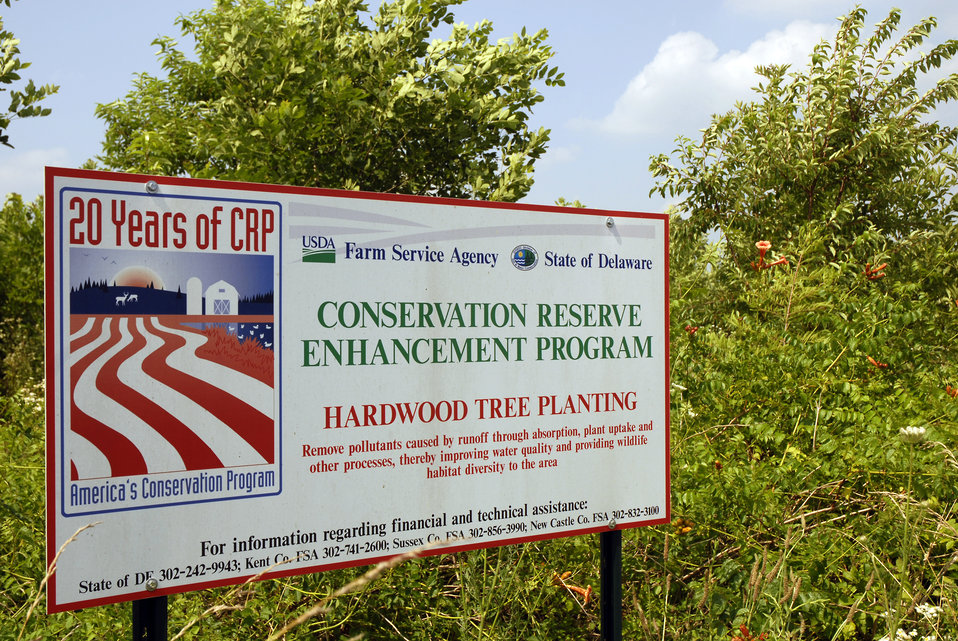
A sign is posted on land announcing 20 years of the U.S. Department of Agriculture’s (USDA) Natural Resources Conservation Service (NRCS) Conservation Reserve Enhancement Program (CREP) in Delaware on July 8, 2008. CREP is a voluntary land retirement program that helps agricultural producers protect environmentally sensitive land, decrease erosion, restore wildlife habitat, and safeguard ground and surface water.